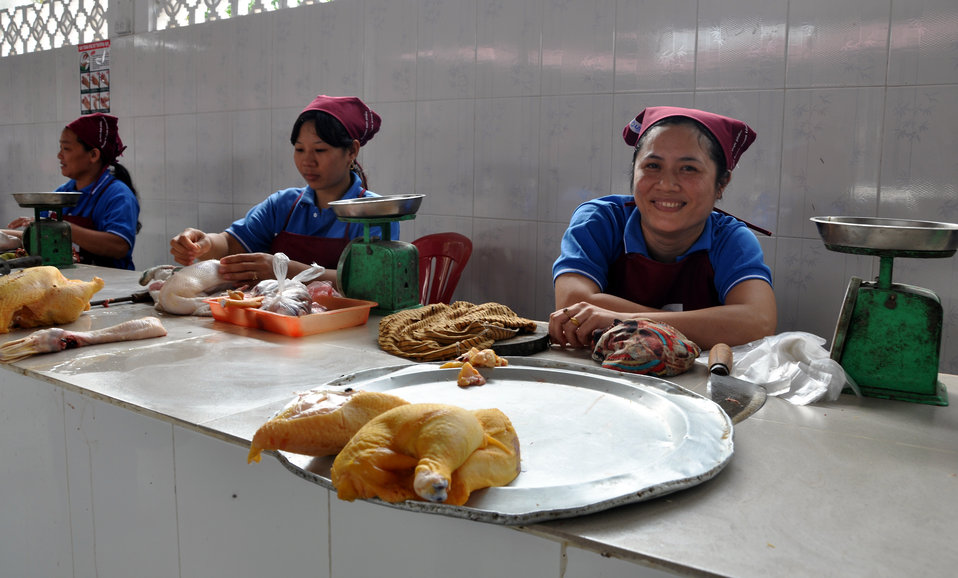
Handover Ceremony Hoa Mac Market Ha Nam

October 26, 2012